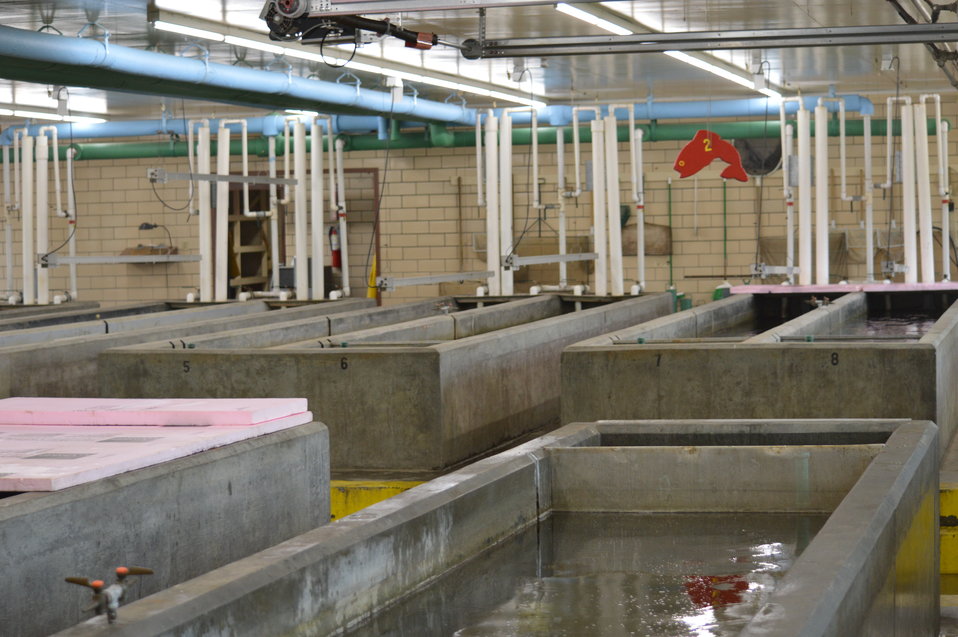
Raceways

Garrison Dam National Fish Hatchery in North Dakota.